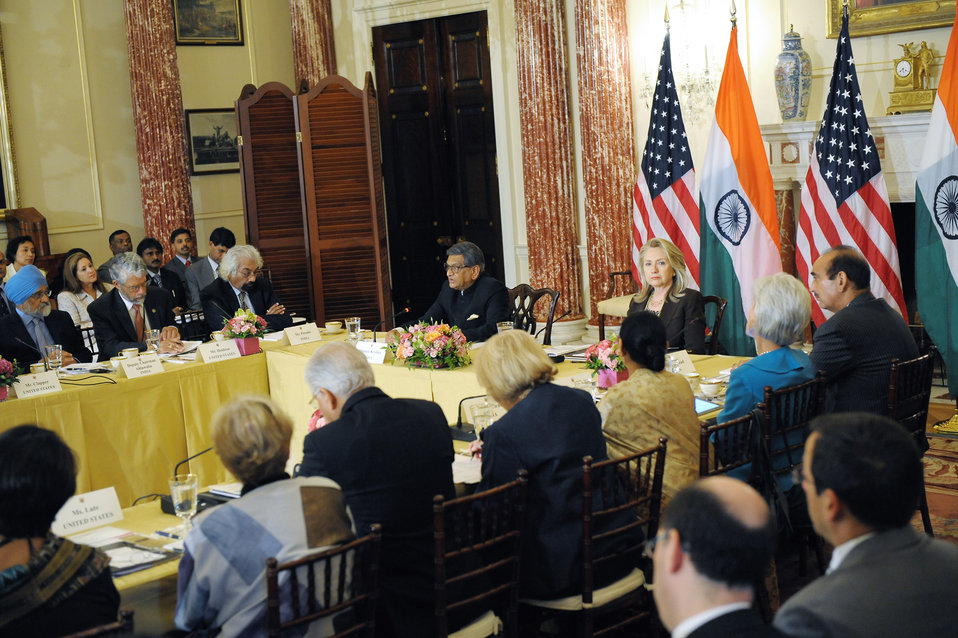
Secretary Clinton Delivers Remarks at the U.S.-India Strategic Dialogue

U.S. Secretary of State Hillary Rodham Clinton delivers remarks at the U.S.-India Strategic Dialogue at the Department of State in Washington, D.C. on June 13, 2012.